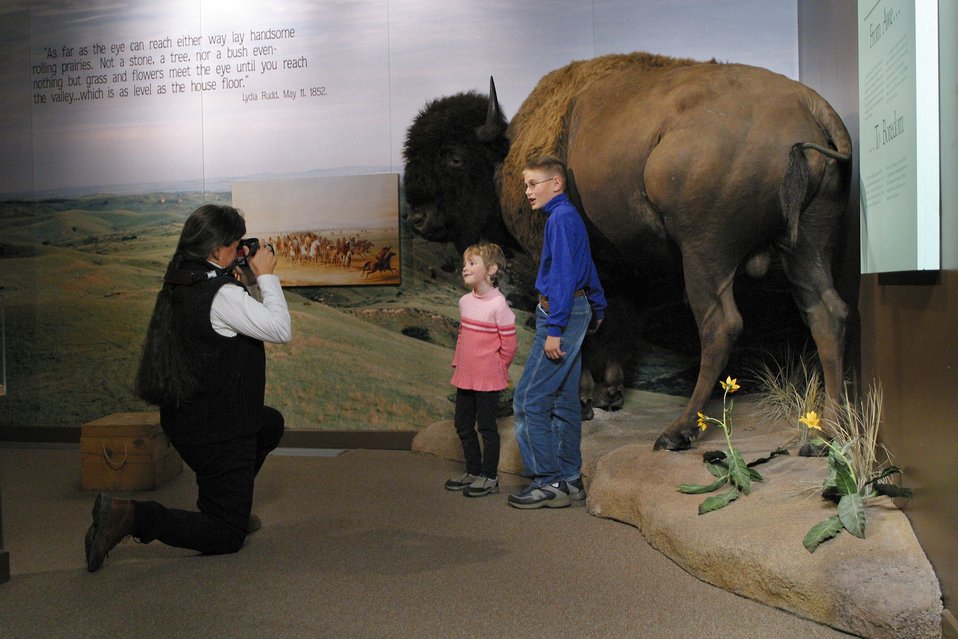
Bison once roamed the plains in great numbers. Visitors learn about the role of Bison and how they helped pioneers along the Oegon Trail.